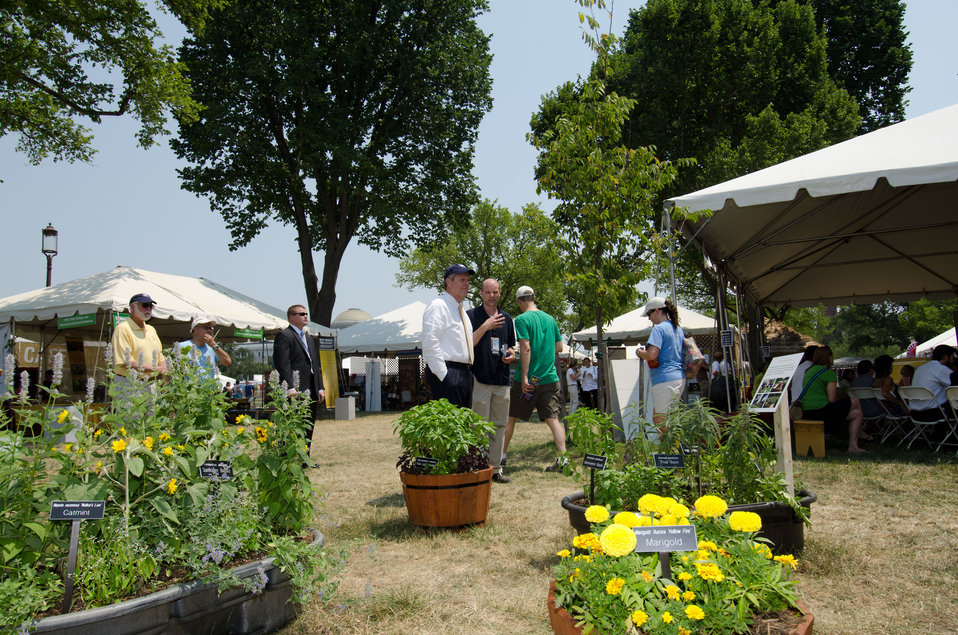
Smithsonian Institution’s Stephen Kidd guides Agriculture Secretary Tom Vilsack through the People’s Garden display of container gardens and talks about the various aspects of Campus and Community themed section of the 2012 Smithsonian Folklife Festival, on the National Mall in Washington, D.C. on Friday, June 29, 2012 Near by is the Mississippi State University Mobile Veterinary Clinic that serves the Northern Mississippi area by providing Spay and neuter services to those in need, and provides medical experience for students. One of the three themes this year is “Campus and Community.” It celebrates the 150 years of the USDA and the Land-Grant University System. The U.S. Department of Agriculture (USDA) and the Land-Grant system extend education across the country, contributing to American agriculture success and rural prosperity. “Campus and Community” has demonstrations, discussions, hands-on activities, and entertainment to that showcase the many ways that this partnership works to improve American agriculture and rural life.